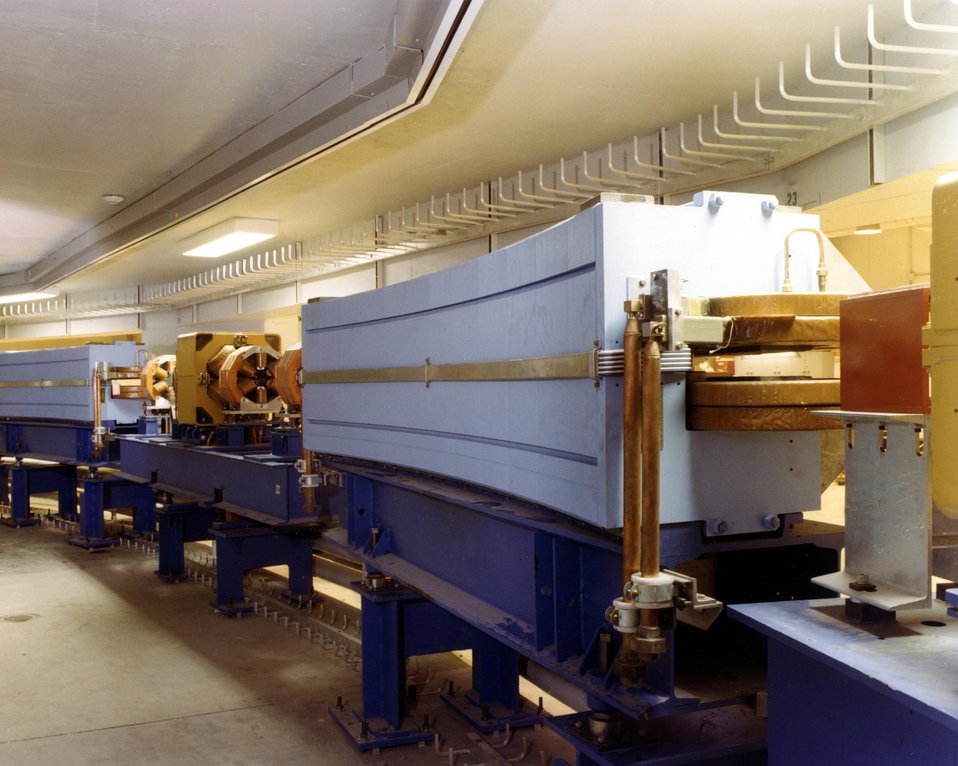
VIEW OF THE BENDING MAGNETS IN THE X-RAY TUNNEL.

THE NSLS WILL ACCELERATE AND STORE ELECTRONS AT A SPEED CLOSE TO THAT OF LIGHT TO PRODUCE AN ENTIRE SPECTRUM OF RADIATION, FROM INFRARED THROUGH X-RAYS, FOR UNIQUE APPLICATIONS IN MANY FIELDS OF SCIENCE. THE FACILITY WILL CONSIST OF TWO ELECTRON STORAGE RINGS. THE SMALLER RING WILL ACCELERATE ELECTRONS TO 700 MILLION ELECTRON VOLTS TO PRODUCE ULTRAVIOLET RADIATION, AND THE LARGER RING WILL ACCELERATE ELECTRONS TO 2500 MILLION ELECTRON VOLTS TO PRODUCE X-RAYS. THE ULTRAVIOLET LIGHT CAN BE USED TO STUDY: CHEMICAL REACTIONS AND STRUCTURES, THE PROPERTIES OF PURE METALS, ALLOYS, AND INSULATING MATERIALS, AND THE TRANSFER OF ENERGY IN BIOLOGICAL SYSTEMS. X-RAY LITHOGRAPHY MAY BE USED BY THE ELECTRICAL INDUSTRY IN THE PRODUCTION OF MICROSCOPIC PRINTED CIRCUITS FOR COMPUTERS AND MICROPROCESSORS. X-RAY MICROSCOPY COMPLEMENTS ELECTRON MICROSCOPY, PERMITTING OPERATIONS THAT WOULD BE IMPOSSIBLE WITH AN ELECTRON MICROSCOPE.